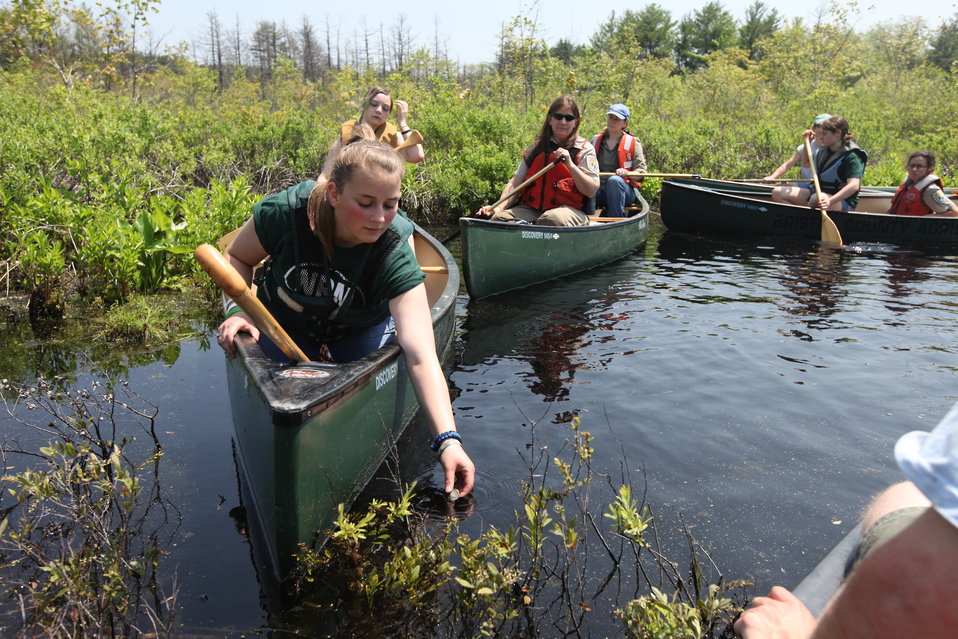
Blanding's turtle release May 2011

Bristol County Agricultural School sophomores partnered with species experts to raise Blanding's turtles and released them in late spring into wetland habitat.